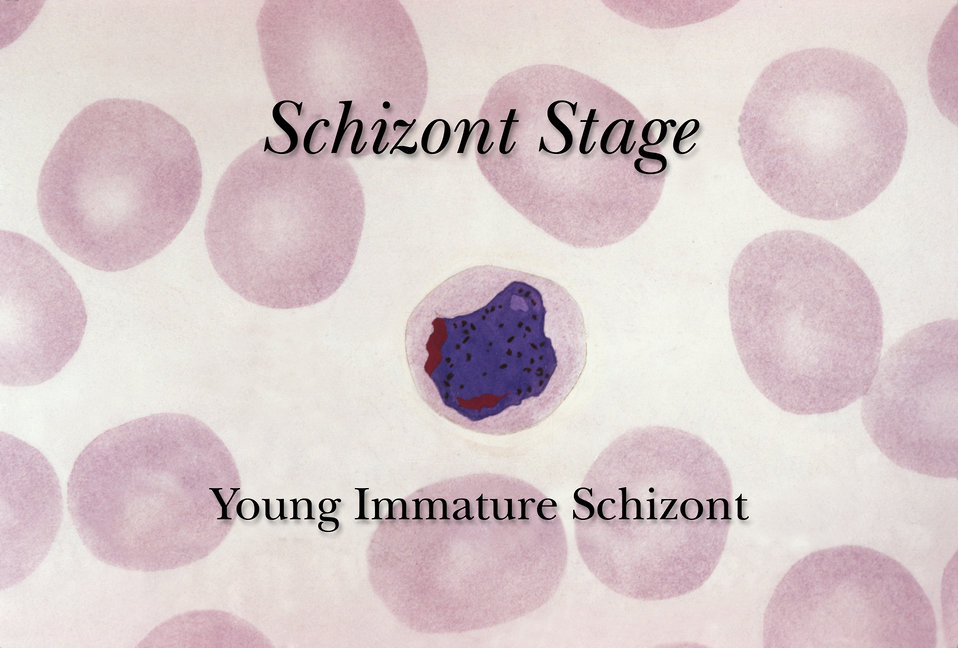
A young, immature schizont common to the Plasmodium spp. life cycle.